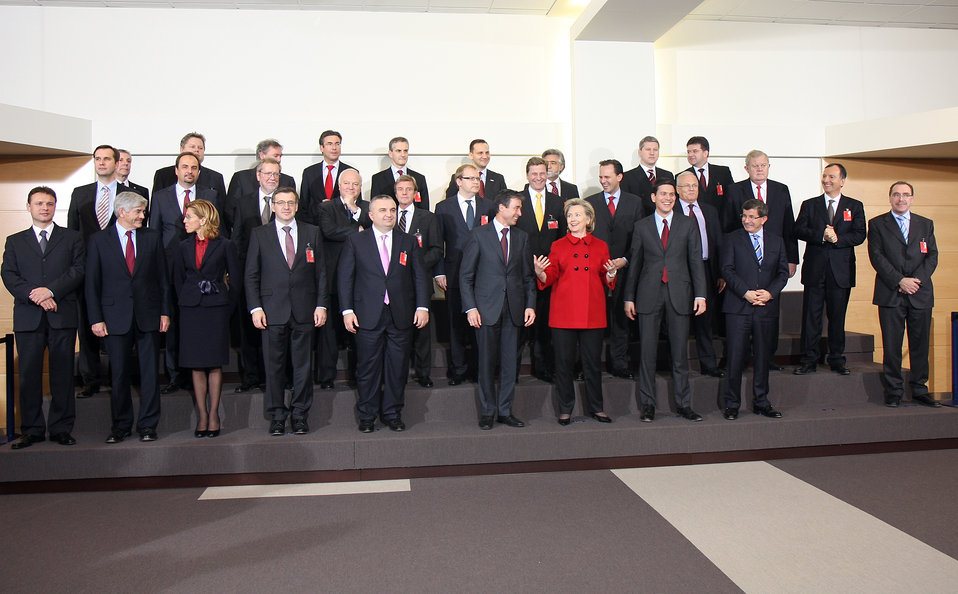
Official Portrait at NATO Headquarters

U.S. Secretary of State Hillary Rodham Clinton poses for an official portrait at the conference hall of NATO headquarters in Brussels, Belgium December 4, 2009.